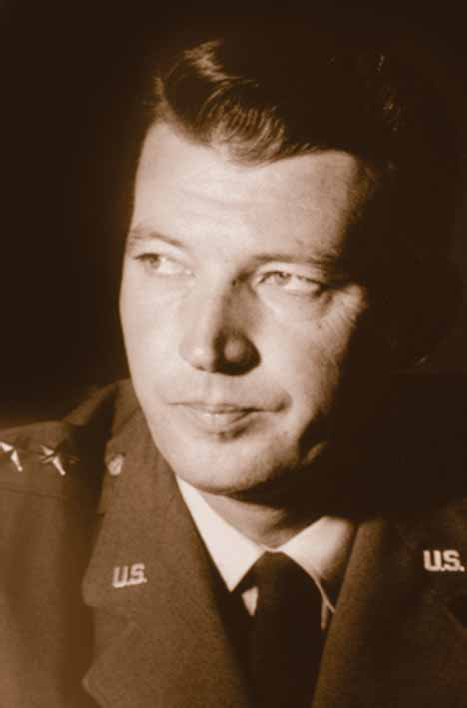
Gen. Schriever's visionary space speech turns 50

General Bernard Schriever is remembered as the father of the U.S. Air Force space and missile program. Schriever Air Force Base in Colorado is named after this pioneer who on Feb. 19, 1957 addressed America's need for space during the inaugural Air Force Office of Scientific Research Astronautics Symposium in San Diego.